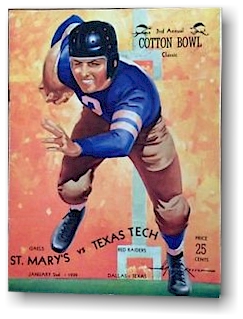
The 1939 Cotton Bowl Game Program. This is the cover of the 36-page program for the 3rd Annual Cotton Bowl Classic football game between Texas Technological College and St. Mary's College in Dallas, Texas, on January 2, 1939. The price for the program was 25 cents.